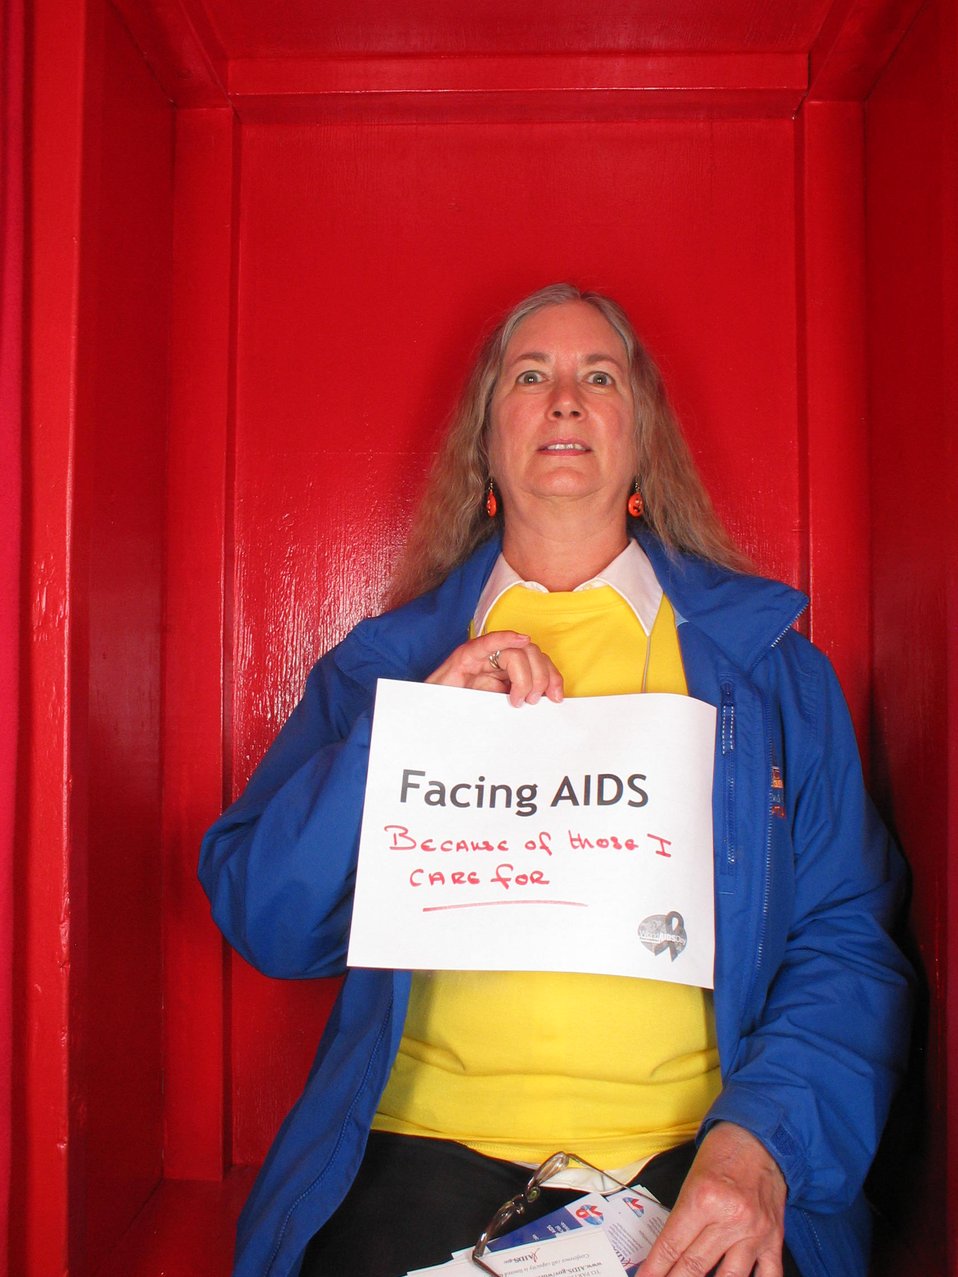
Facing AIDS because of those I care for